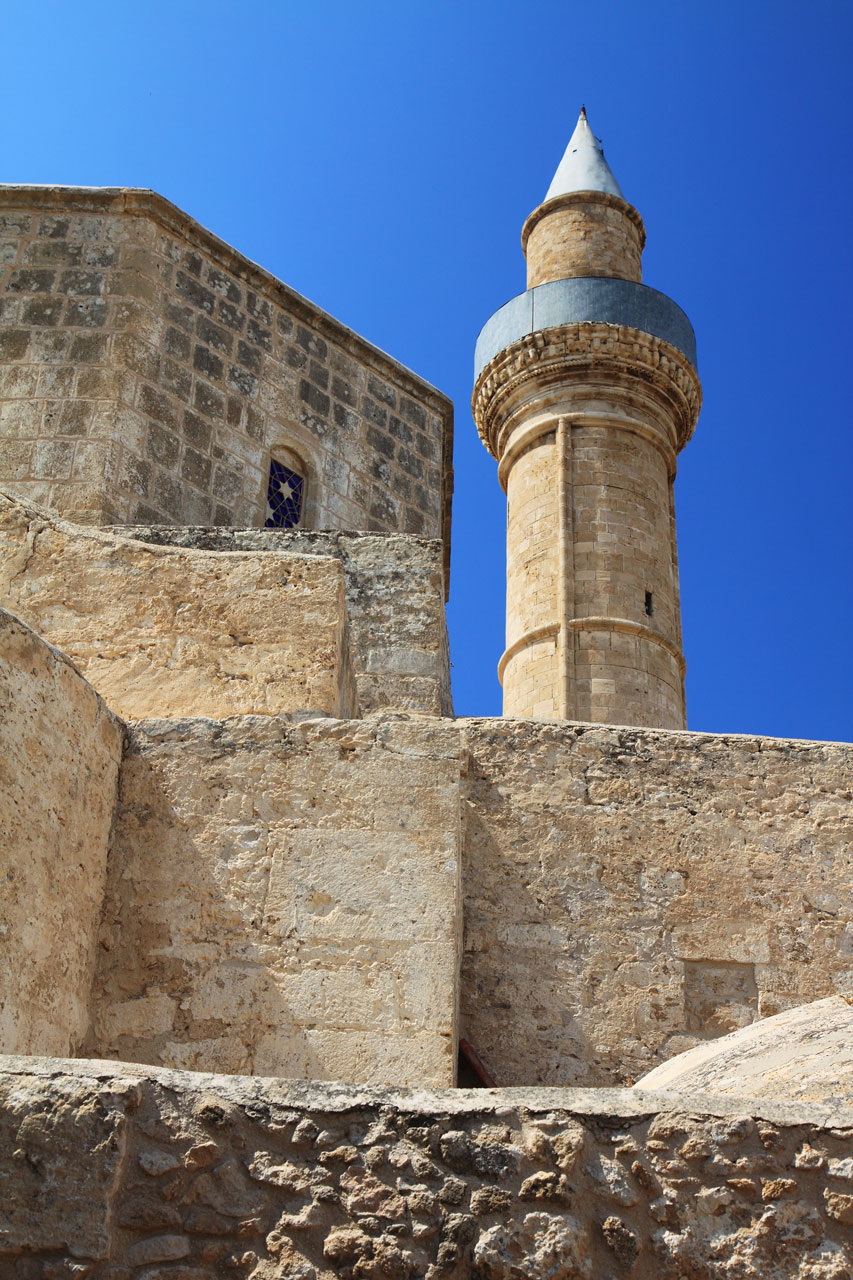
Mosque tower

Small mosque in paphos town - cyprus.